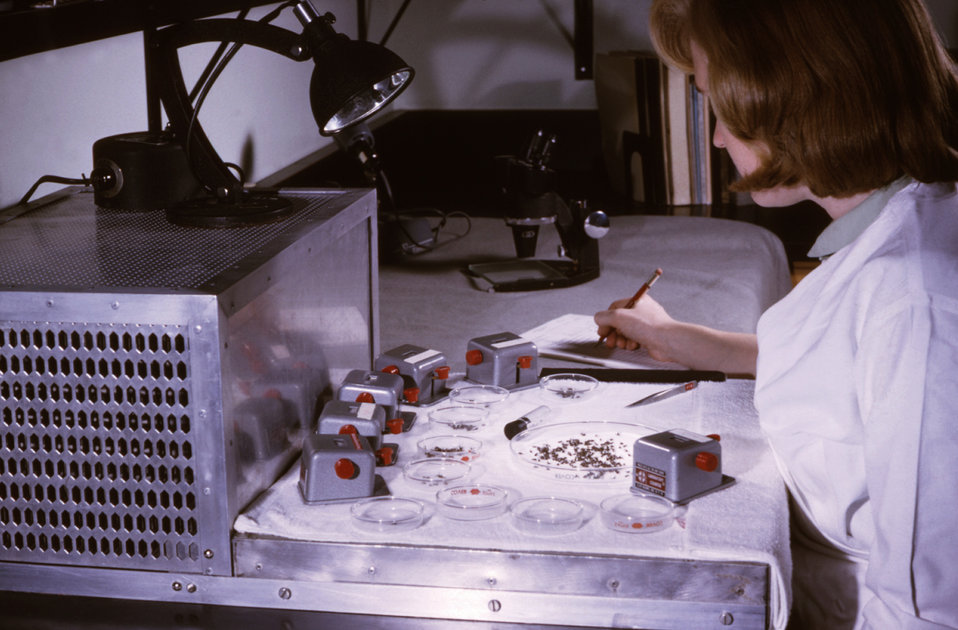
A CDC laboratory technician is shown here sorting, and counting mosquitoes for an arbovirus study.